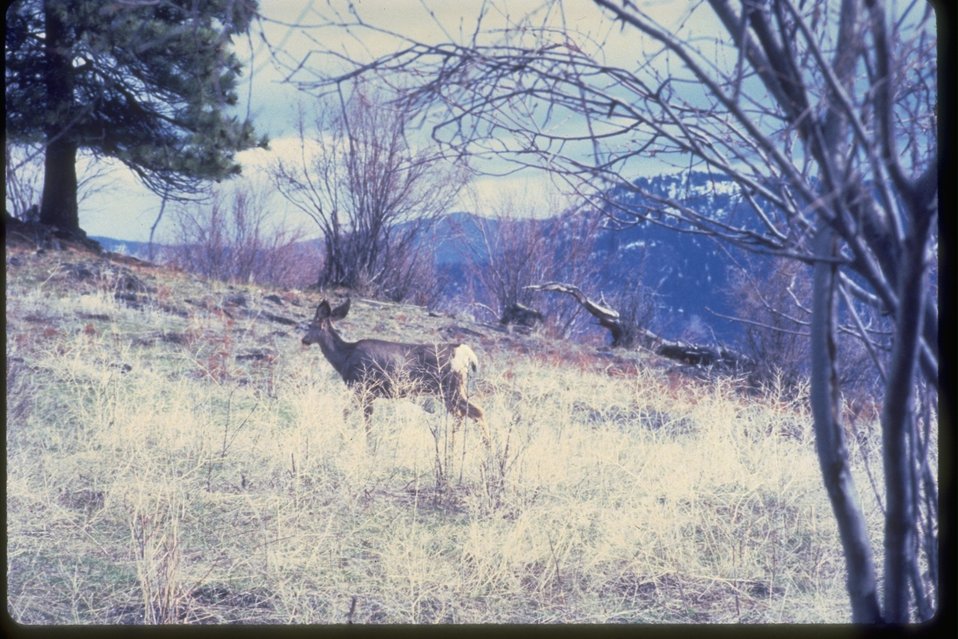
Mule Deer on Flagstaff Mountain in Stevens County, Washington.